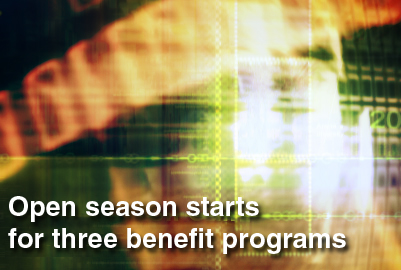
Open season set for 3 civilian benefit programs

Air Force Personnel Center officials at Randolph Air Force Base, Texas, have announced the open season for three civilian benefit programs lasting Nov. 9 through Dec. 14, 2009. The three programs are the Federal Employees Health Benefits program, or FEHB; the Federal Employees Dental and Vision Insurance Program, or FEDVIP; and the Federal Flexible Spending Account, or FSAFED, program.